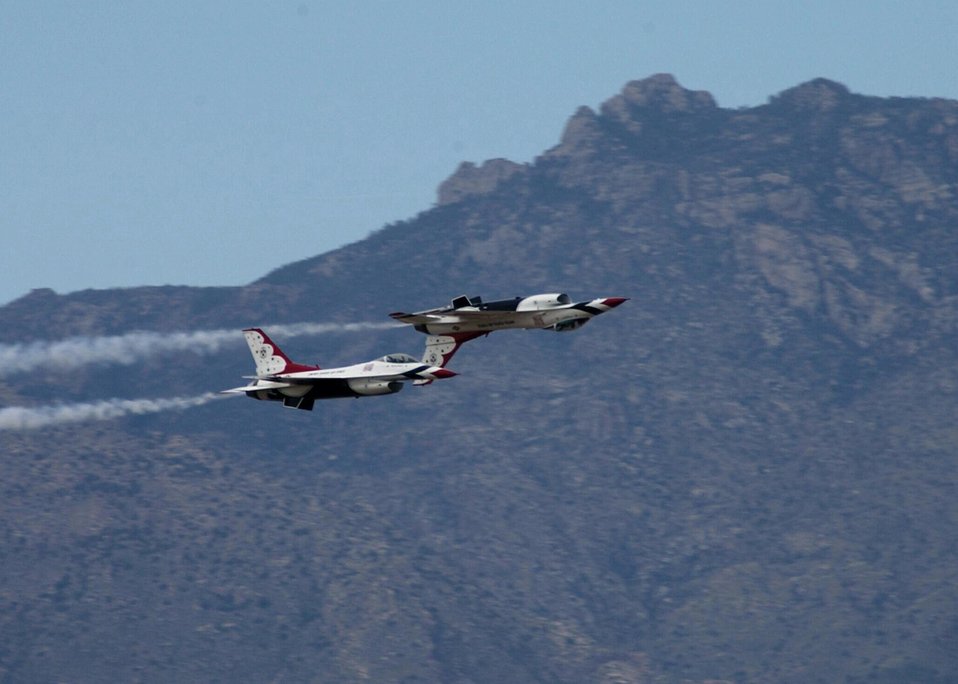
I spy rolling Thunder

DAVIS-MONTHAN AIR FORCE BASE, Ariz. -- The Thunderbirds perform in F-16 Fighting Falcons for an air show here April 3. The team is stationed at Nellis Air Force Base, Nev.